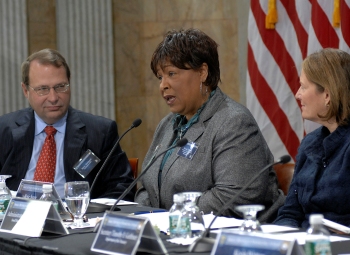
Treasury and SBA Host a Small Business Financing Forum

Bessie Swan of Wheeler Creek Community Development Corp. talks about her perspective as a lender to small businesses.